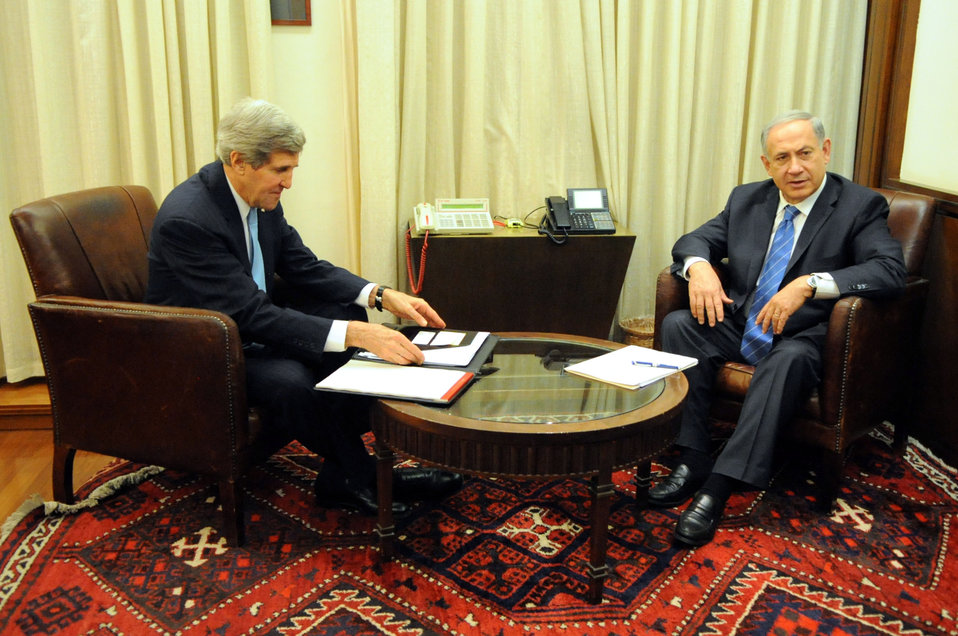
Secretary Kerry, Israeli Prime Minister Netanyahu Sit for a One-on-One Discussion

U.S. Secretary of State John Kerry and Israeli Prime Minister Benjamin Netanyahu settle into their seats in Netanyahu's private office before a one-one-one discussion in Jerusalem on January 2, 2014.